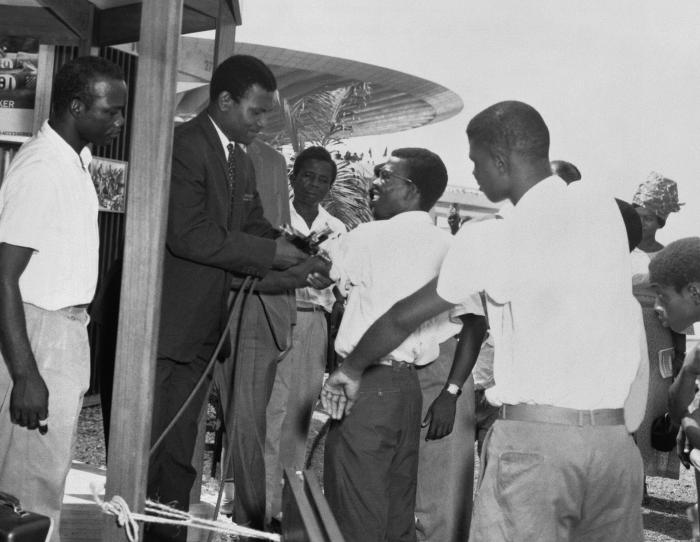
Using a Hypo-Spray-Jet gun, this historic image depicts a Nigerian man being vaccinated against smallpox during the World Smallpox Eradication Program.